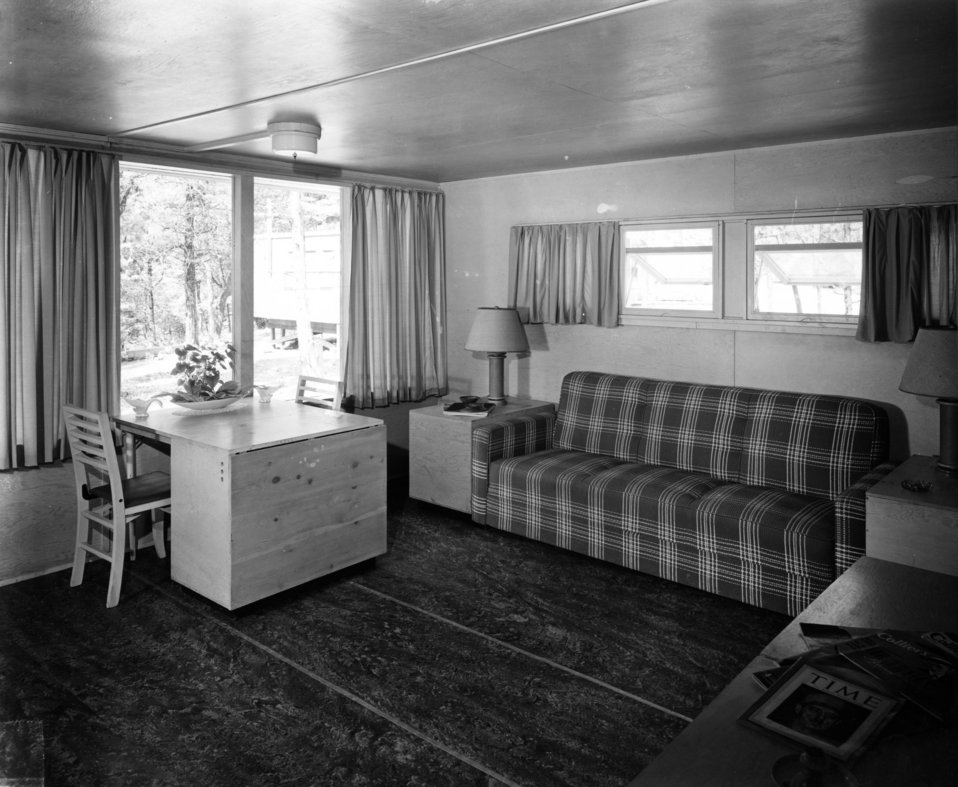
Housing at Oak Ridge